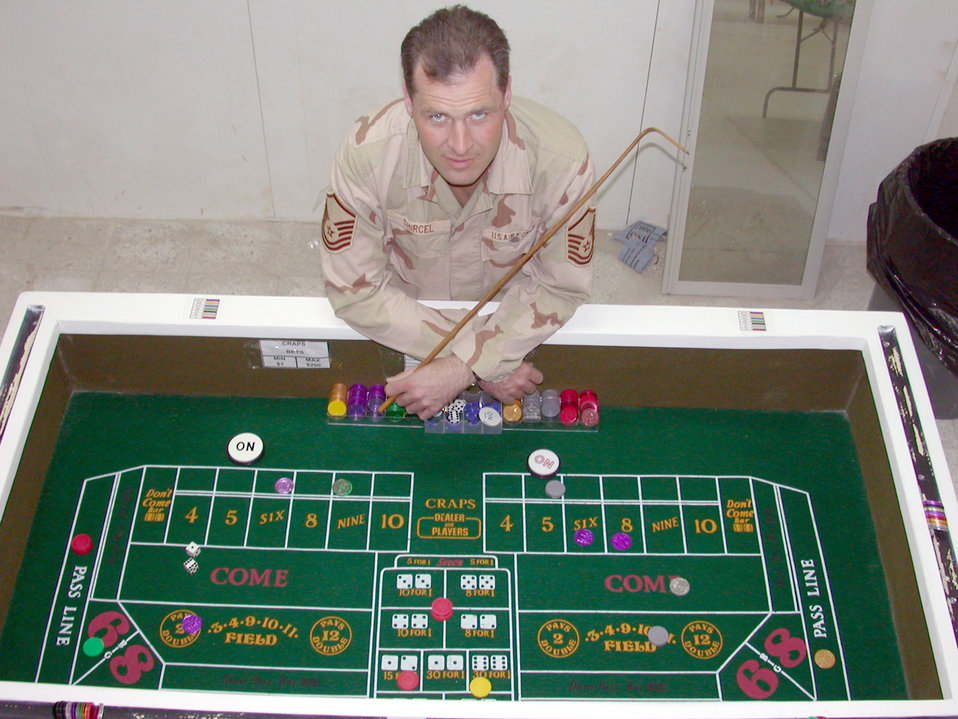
Casino king

SOUTHWEST ASIA -- Master Sgt. Thomas Shircel of the 386th Air Expeditionary Wing stands over one of the casino tables he helped build for the recreation center at a forward-deployed location.